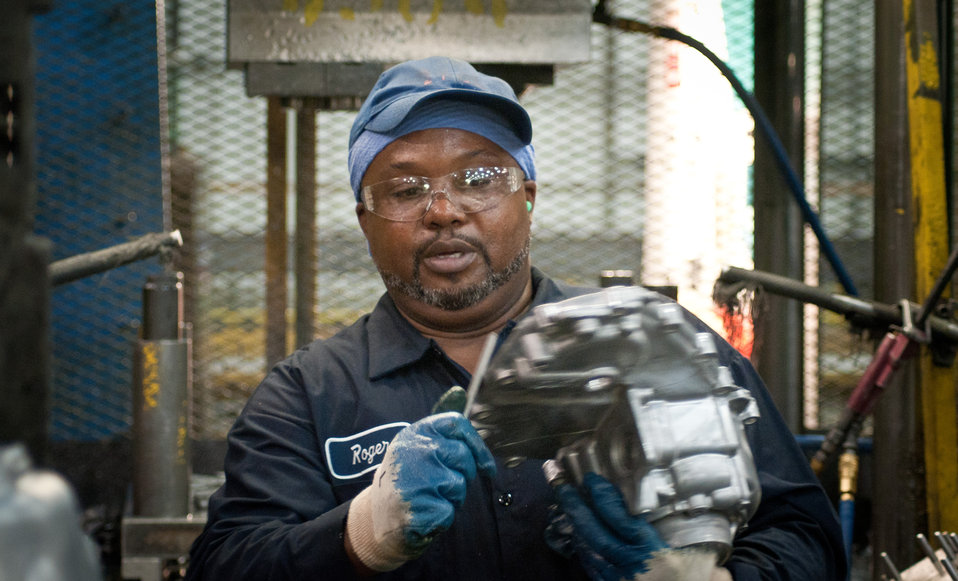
Trim Operator Roger Brown at Port City Group’s Port City Castings Corporation manufactures high-pressure aluminum die-castings, mostly for the automotive industry, in Muskegon, MI, facility on Wednesday July 20, 2011. Port City Group boosted its employment by 12 percent over last year thanks to two Rural Business Guaranteed Loans totaling $9.6 million. In its 80,000 sq. ft. facility, machines that range from 800 – 1,600 tons, and cast A380 aluminum alloy products from melted ingots of aluminum, into automotive components of U.S.A. made vehicles. The process features a variety of robotic presses; computer controlled machining; quality control facility; and complete measurement and testing laboratory. In 2009 banks were backing out of loans for PCG equipment purchase agreements. The U.S. Department of Agriculture (USDA) loan guarantee helped make the loan possible with its guarantee. PCG obtained the needed robotic and other equipment. This resulted in a stable workforce that has since grown. When asked about their USDA experience, Port City Group Sales Manager Laura LaGuire said, “It was great! They were very helpful. Everything that came up was handled smoothly, the money came in place when it was needed, and it was a very smooth transition.”